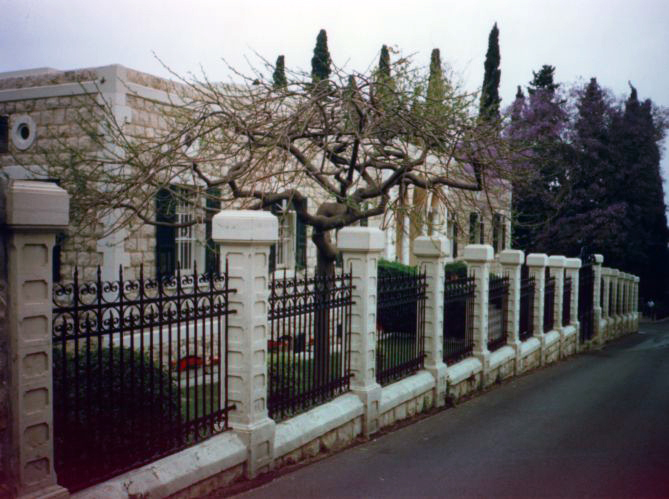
10-haparsim-street